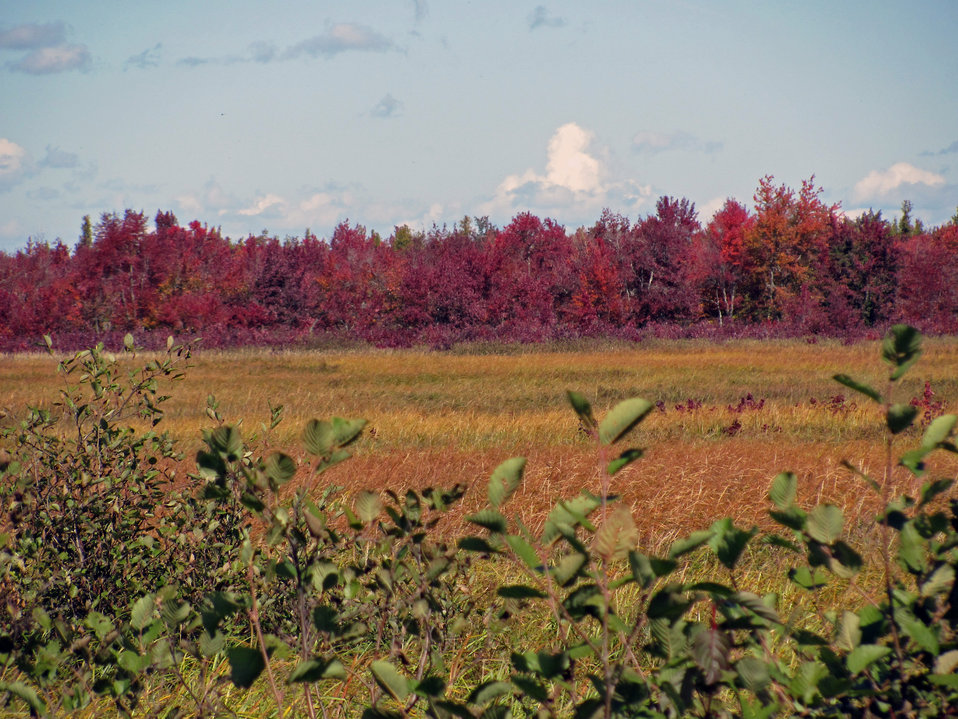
Fall

Sunkhaze Meadows National Wildlife Refuge, ME.